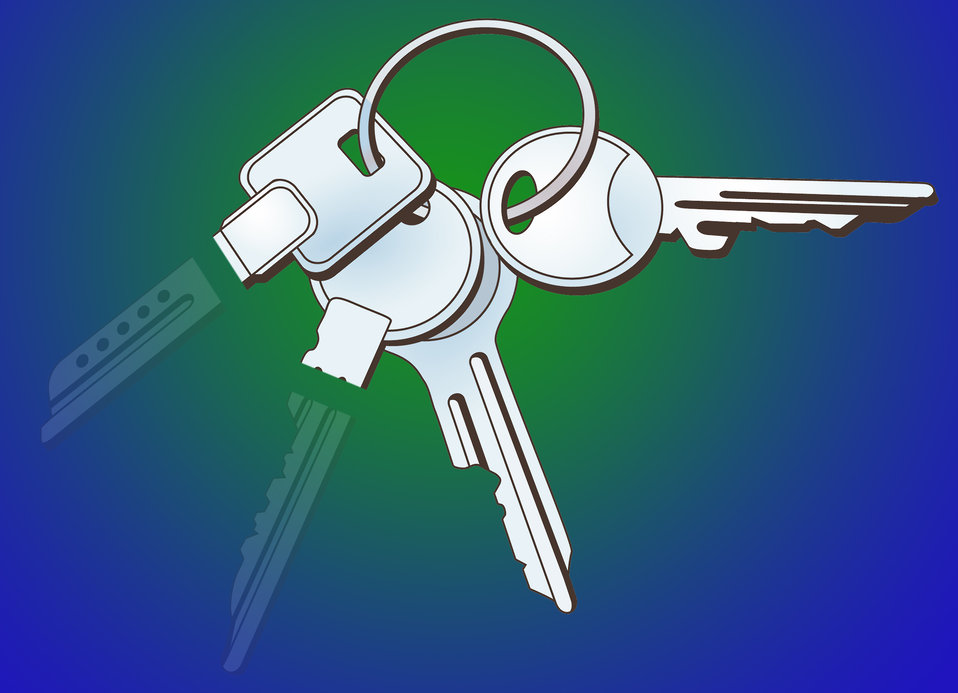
Memory Device

The one-shot memory devices that recent NIST research might make possible can be envisioned as physical keys that can only be used a single time, a useful feature for computer security applications.